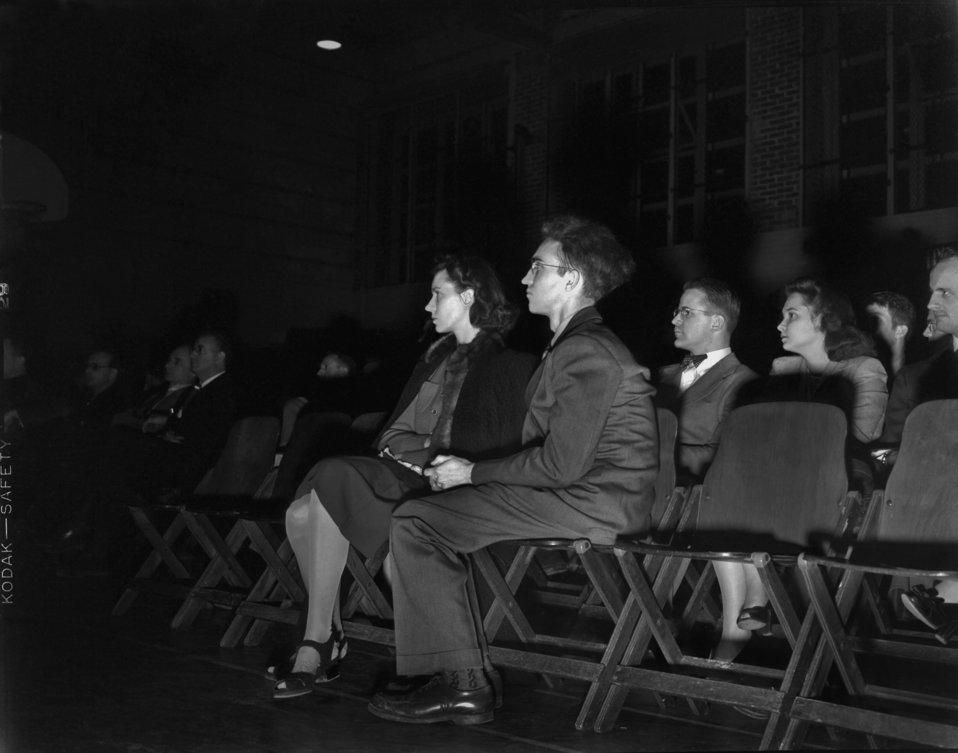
Atomic Engineers and Scientist Association Meeting Oak Ridge

3252-8b DOE photo Ed Westcott 1-14-1947 Oak Ridge Tennessee